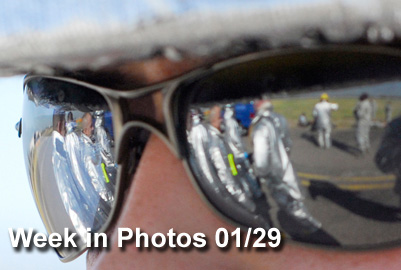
Week in Photos

Air Force Week in Photos for Jan. 29, 2010, highlights photos from around the Air Force. In this photo by Staff Sgt. Bryan Franks, firefighters from Soto Cano Air Base, Honduras, conduct a major accident response exercise Jan. 22, 2010, on the base flightline.